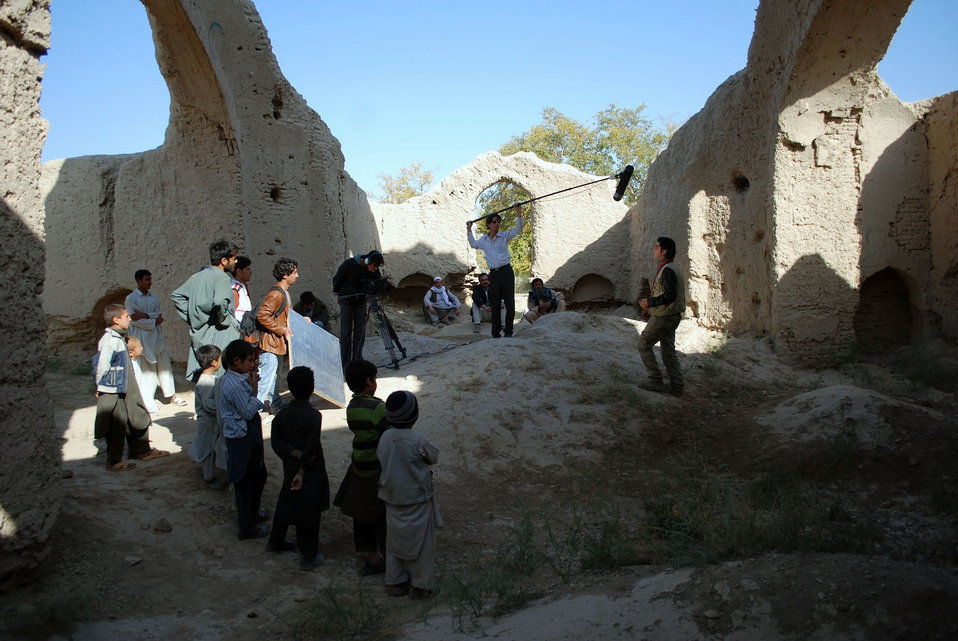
'On the Road' in Balkh Province